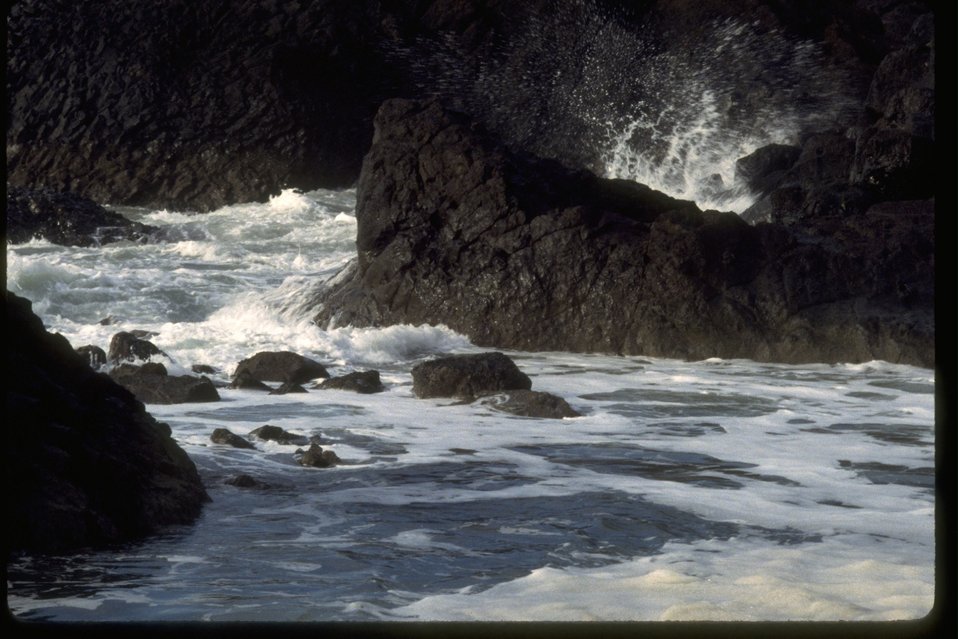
Hightide at Cobble Beach tidepool.